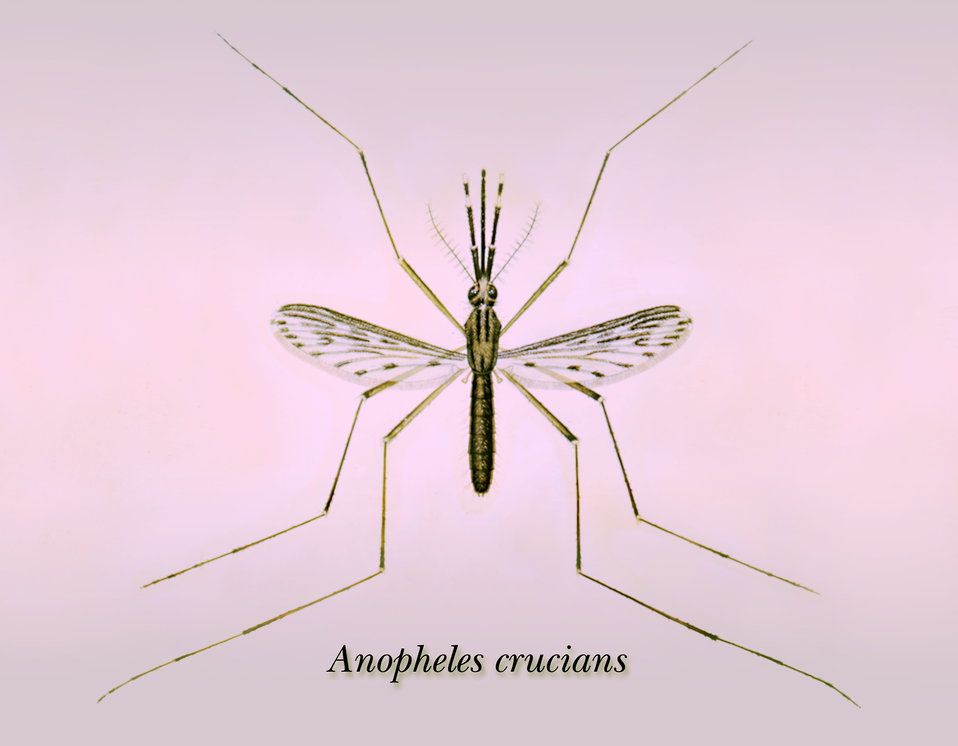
An illustration of an Anopheles crucians mosquito.